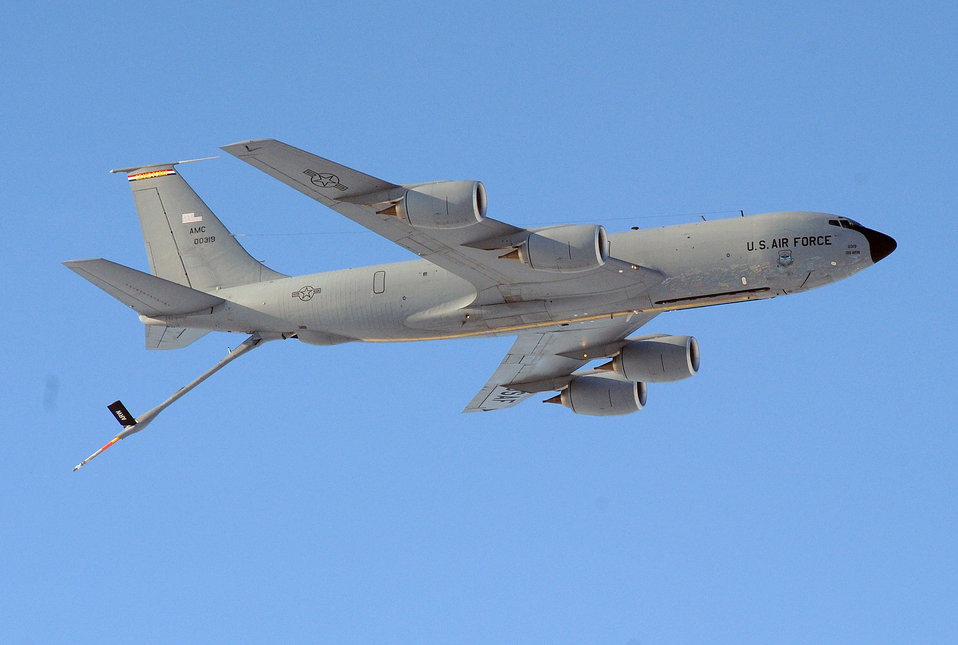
Last tanker leaves Grand Forks

The final KC-135 Stratotanker formerly stationed at Grand Forks Air Force Base, N.D., performs a low approach, with its boom fully extended, in one last salute to the men and women of Grand Forks AFB, after taking off from the base Dec. 4, 2010, for the final time. The departure of this aircraft signaled the end of the KC-135 air refueling mission at Grand Forks AFB.